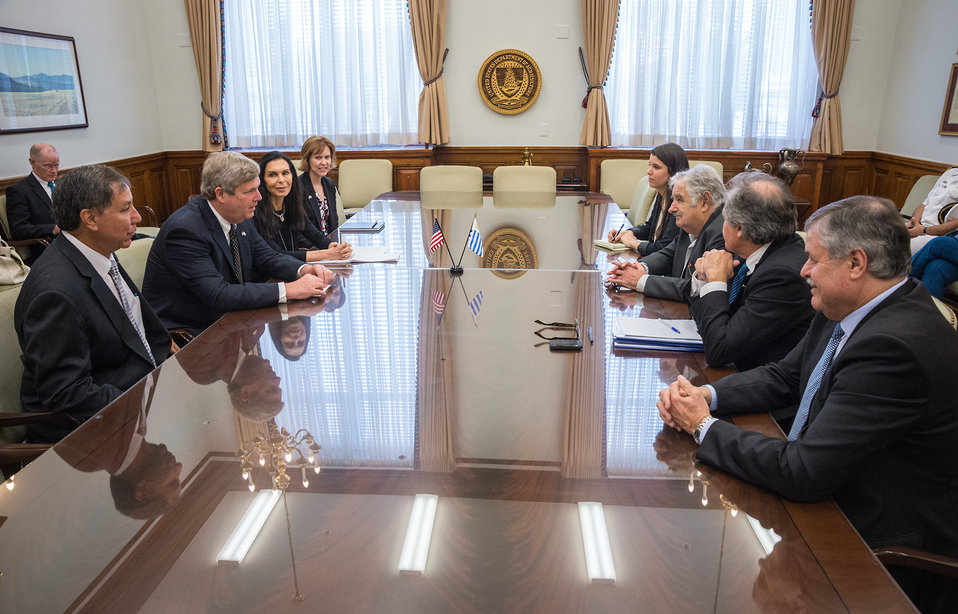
Agriculture Secretary Tom Vilsack and President Jose Mujica of Uruguay discuss cooperation in agricultural research, production and climate changes on agriculture at the U.S. Department of Agriculture (USDA) in Washington, D.C. on Wednesday, May 14, 2014. USDA Marketing and Regulatory Programs (MRP) Under Secretary Ed Avalos and USDA Farm and Foreign Agricultural Services (FFAS) Deputy Under Secretary Darci Vetter participated in the discussion.